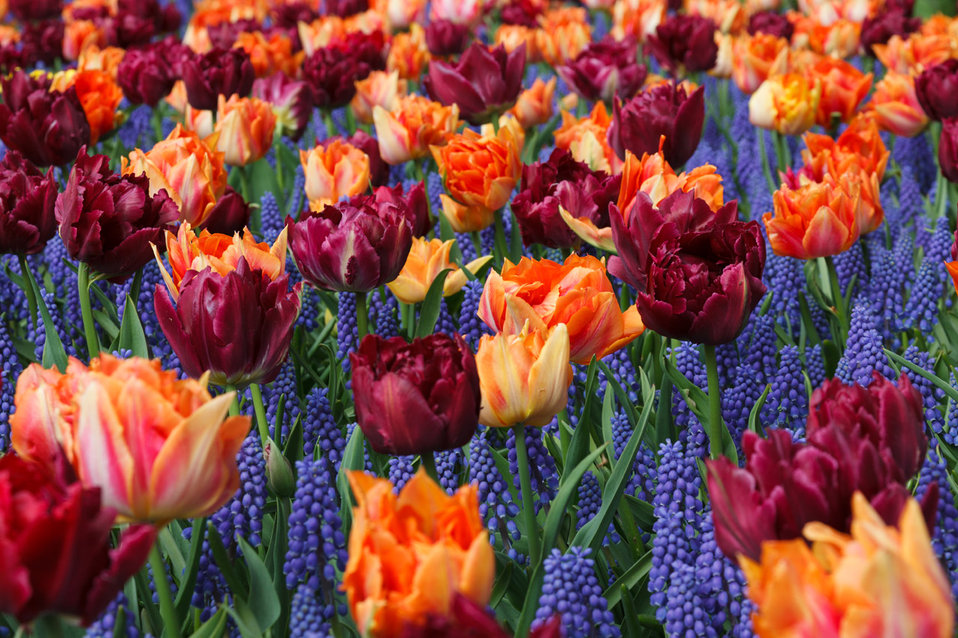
Orange and purple tulips

Purple and orange tulips with grape hyacinths.